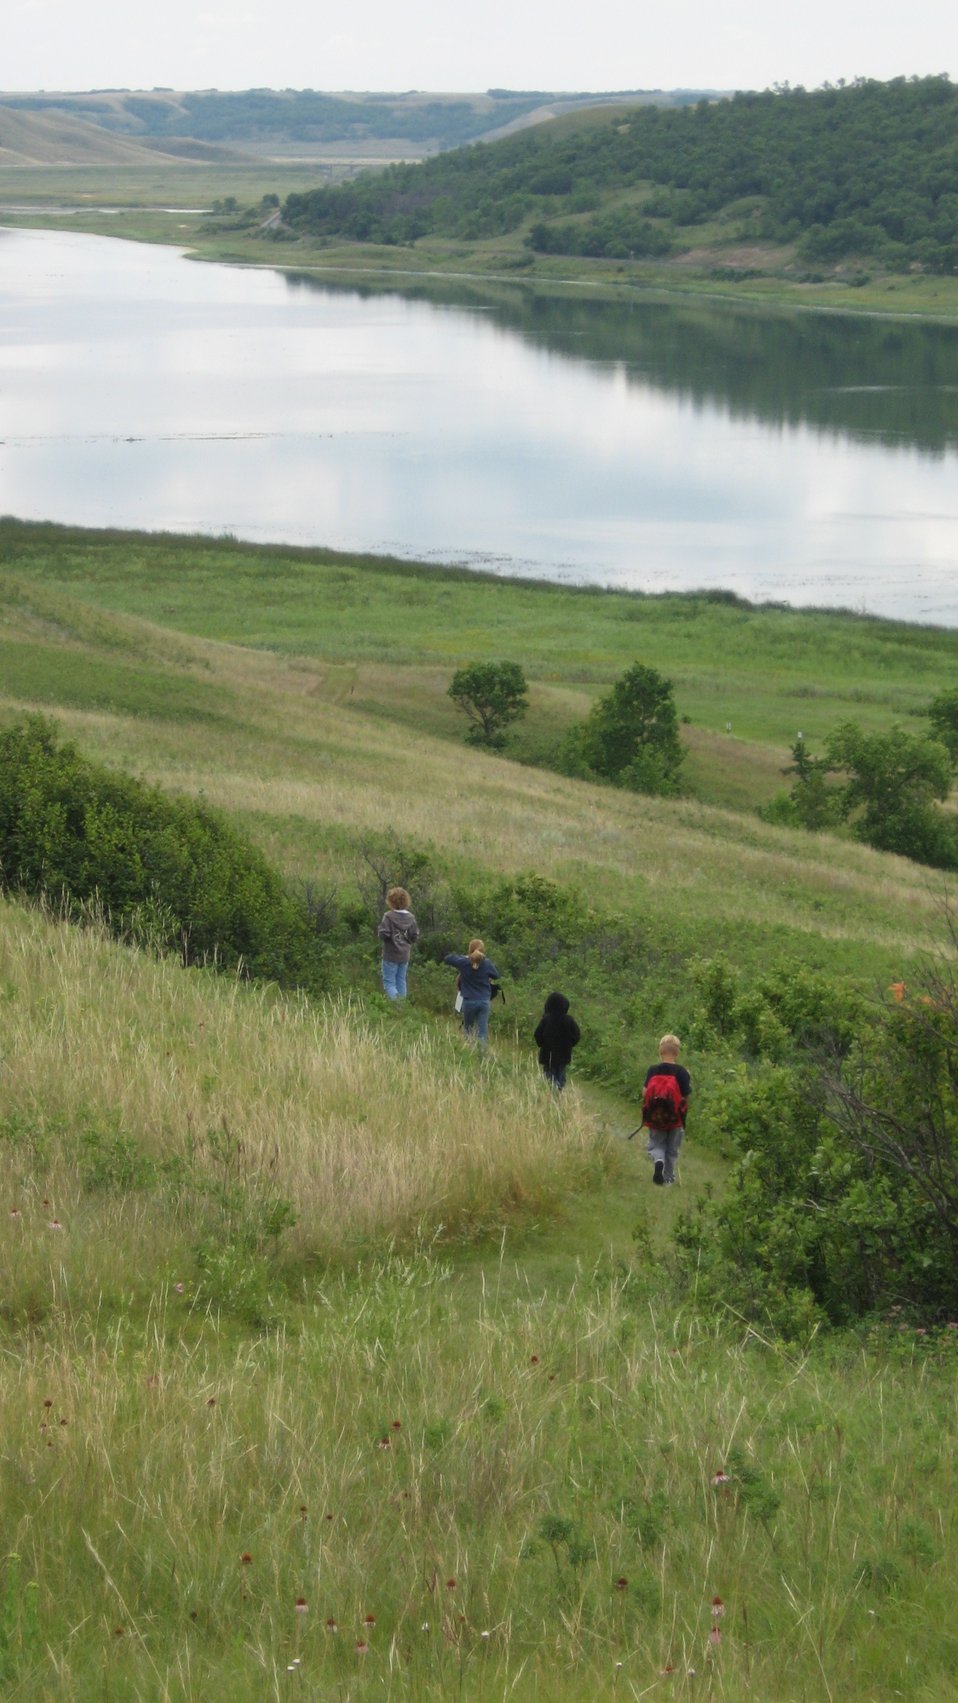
Hiking in Des Lacs National Wildlife Refuge

A group of young people hike on Munch's Coulee National Recreation Trail in Des Lacs NWR.